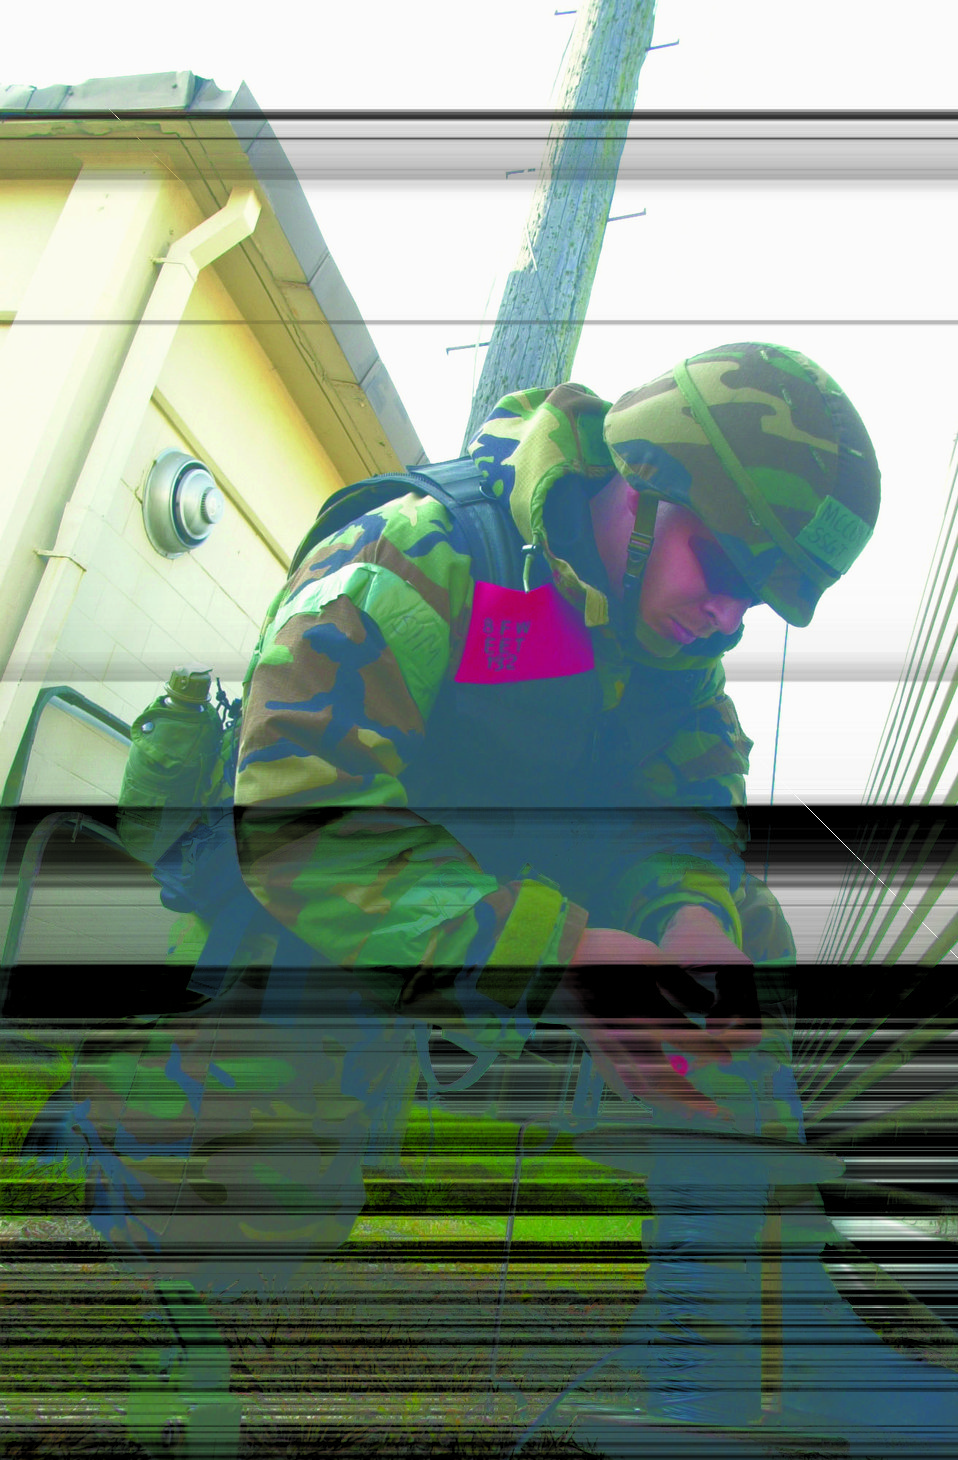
Kunsan Airmen destroy Korean War bazooka round

KUNSAN AIR BASE, South Korea -- Staff Sgt. John McCoy wires a remote-firing system Dec. 16 to destroy a Korean War-era bazooka round discovered by Korean airmen. The remote detonator will send an electrical signal to the military explosive and destroy the rocket. He is assigned to the 8th Civil Engineer Squadron explosive ordnance disposal flight.